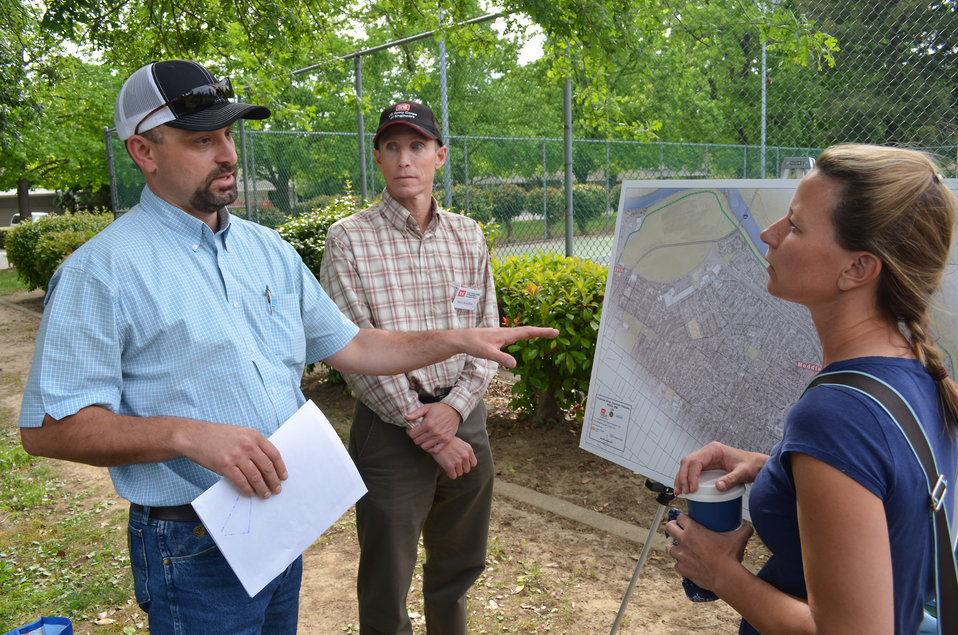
Levee work topic of public meeting in River Park

Mark Boedtker (center), an engineering technical lead for the U.S. Army Corps of Engineers Sacramento District and Brian Flanagan a construction contractor for the Corps, take turns answering questions during a public meeting April 24, 2015, regarding American River levee work in the River Park neighborhood of Sacramento, Calif., beginning in June.